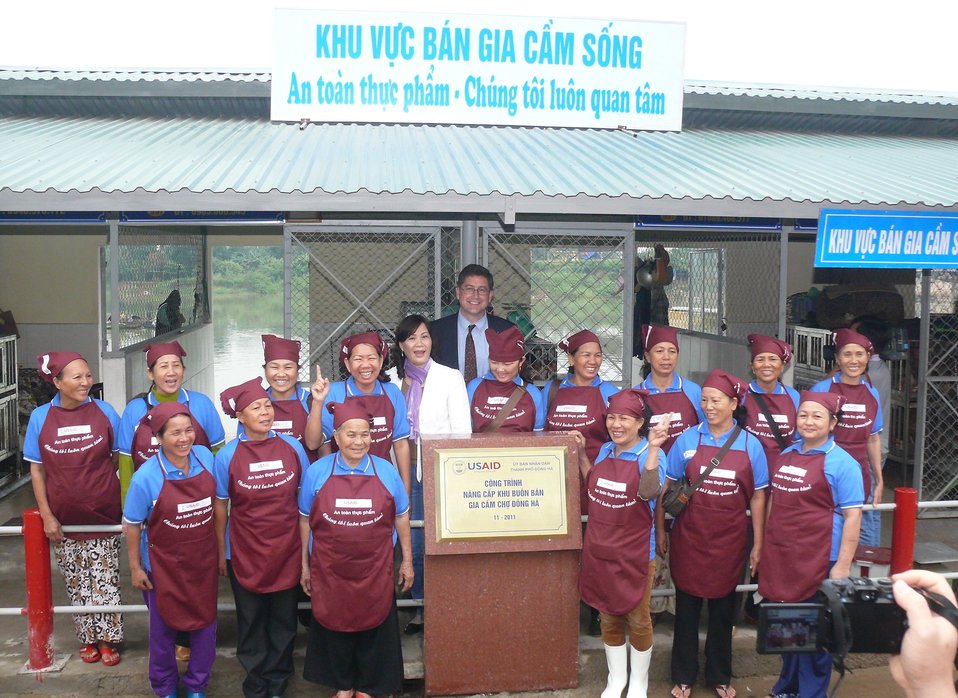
Disease Risk Reduction in Dong Ha Poultry Market, Quang Tri

Photo by Thu Nhu from USAID's Avian and Pandemic Influenza Initiative project team; December 5, 2011